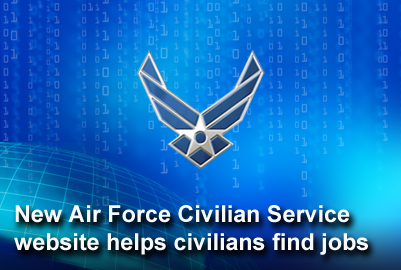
Air Force Civilian Service website